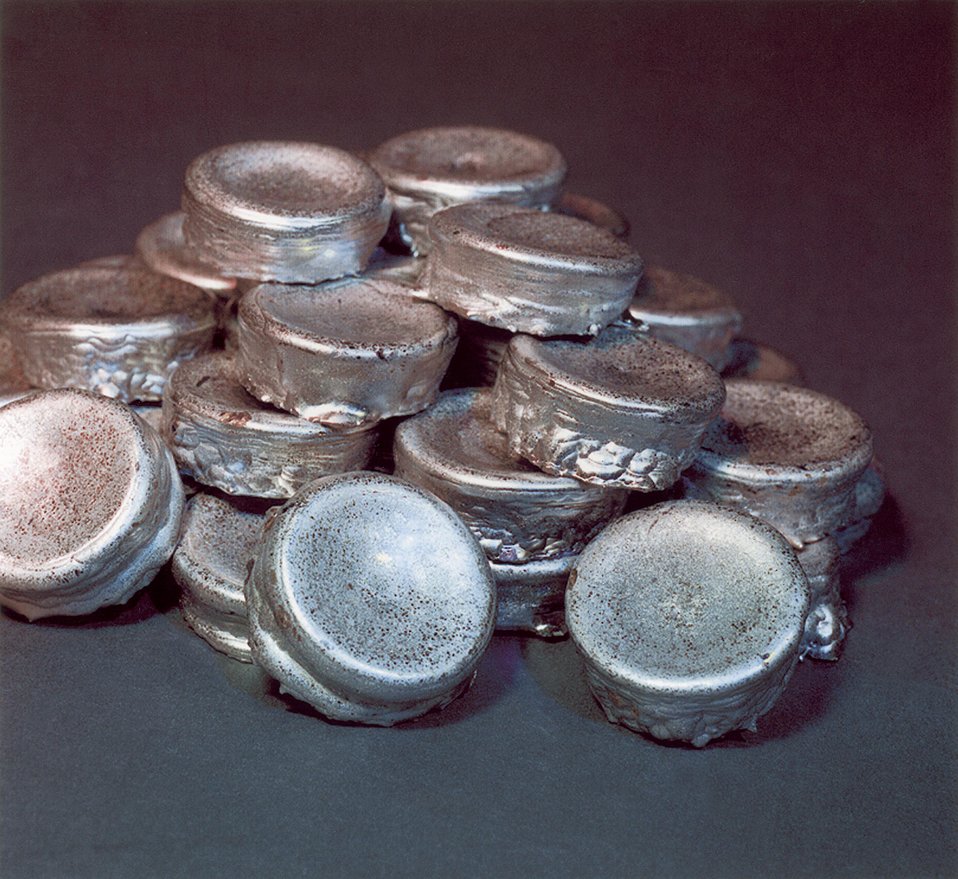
ENRICHED URANIUM PRODUCED AT LLNL PLANT WAS COLLECTED AS NUGGETS THE SIZE AND THICKNESS OF SEVERAL QUARTERS.

A DESIRED ISOTOPE OF A CHEMICAL ELEMENT MUST BE SEPARATED FROM THE REMAINING ISOTOPES, FOR USES RANGING FROM MEDICINE TO ENERGY TO WEAPONS APPLICATIONS. LLNL DEVELOPED AN EFFICIENT TECHNIQUE CALLED ATOMIC VAPOR LASER ISOTOPE SEPARATION (AVLIS), BASED ON THE FACT THAT DIFFERENT ISOTOPES OF THE SAME ELEMENT, WHILE ELECTRONICALLY IDENTICAL, HAVE DIFFERENT ELECTRONIC ENERGIES AND THEREFORE ABSORB DIFFERENT COLORS OF LASER LIGHT.